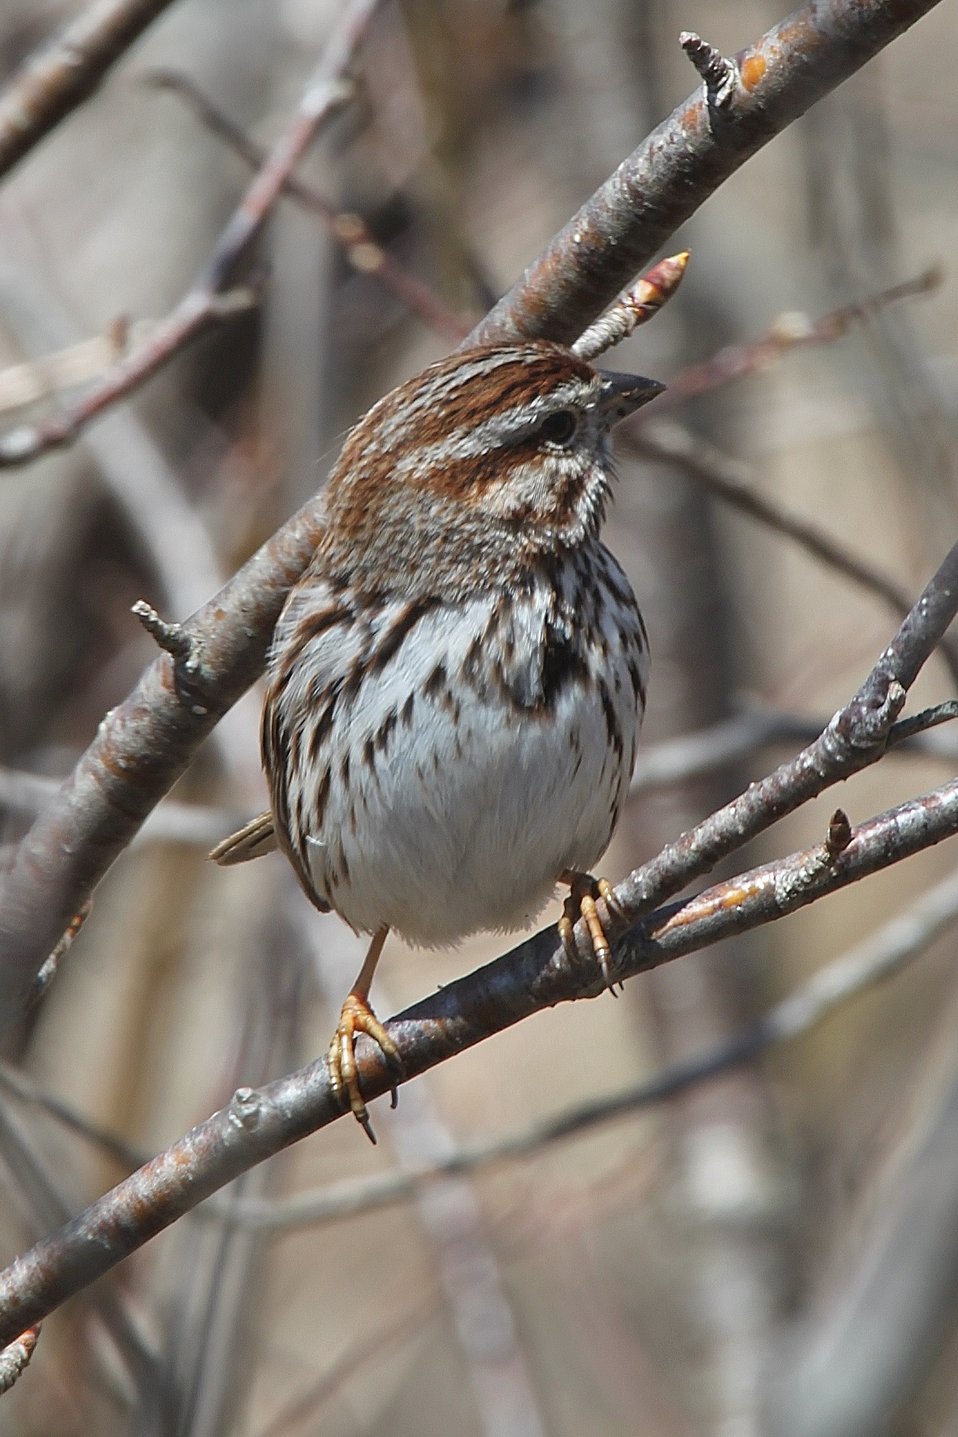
Song sparrow at Missisquoi National Wildlife Refuge